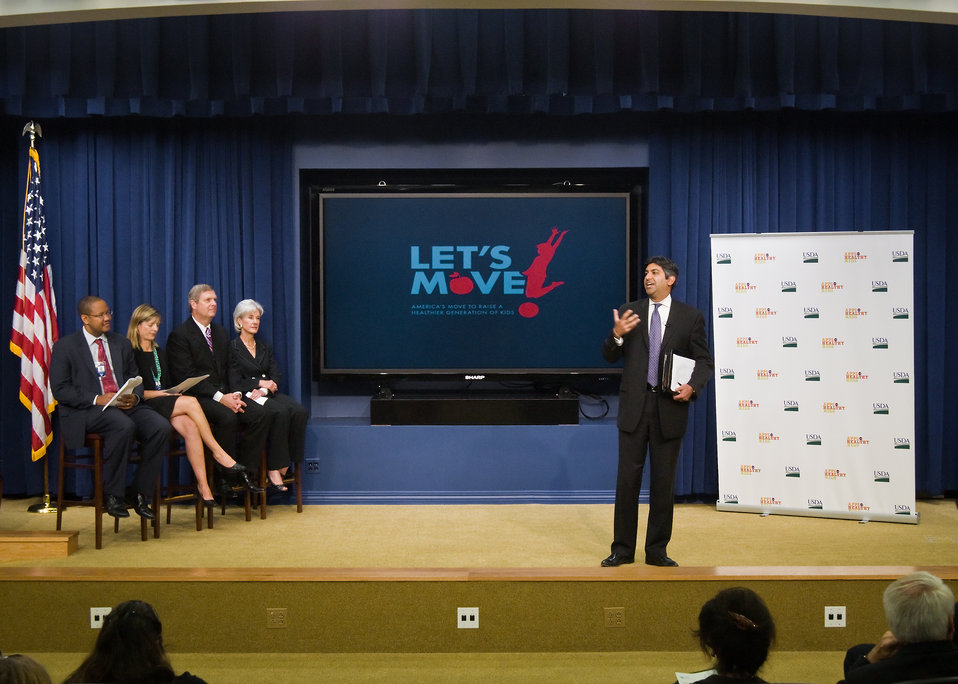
Agriculture Secretary Tom Vilsack and Health and Human Services Secretary Kathleen Sebelius listen as Aneesh Chopra, White House, Chief Technology Officer speaks of the importance of using information technology and social media to improve childhood nutrition as they honor the Winners of The Apps for Healthy Kids competition at the White House in Washington, DC, on Wednesday, September 29, 2010. The Apps for Healthy Kids competition is part of First Lady Michelle Obama’s Let’s Move campaign to end childhood obesity within a generation. The competition challenges software developers, game designers, students and other innovators to develop fun and engaging software tools and games to urge children, especially “tweens” (children ages 9-12) – directly or through their parents – to eat better and be more physically active. The applications are software tools or games for the web, personal computer, mobile handheld device, console or any software platform available to the public. USDA Photo 10di1506--13 by Bob Nichols.